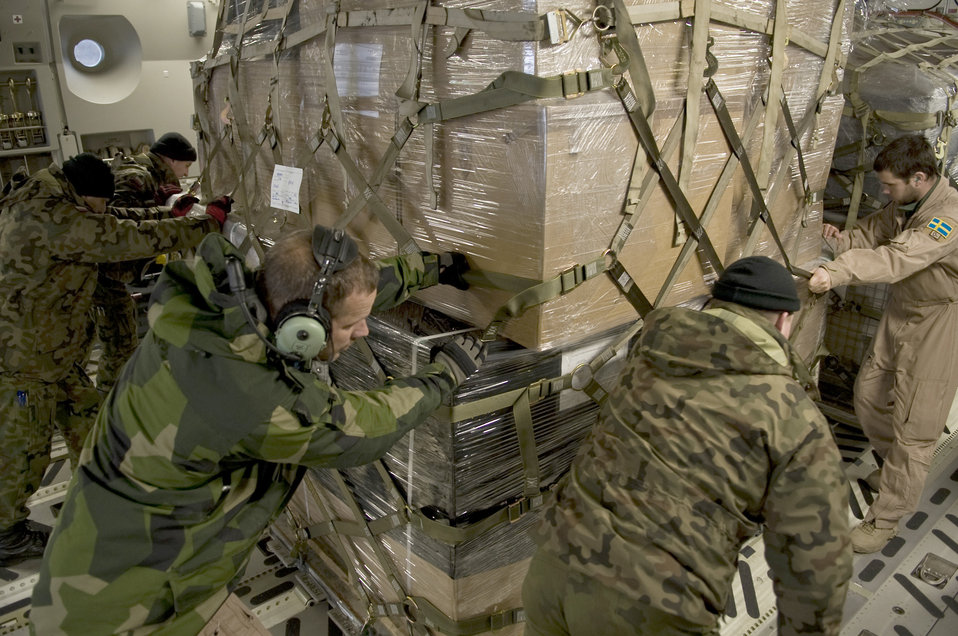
Three-day mission

Crew members from the Heavy Airlift Squadron at Papa, Hungary, and Polish soldiers load pallets on a C-17 Globemaster III Dec. 8, 2010, at Bagram, Afghanistan. The three-day mission will span about 7,000 miles covering the countries of Hungary, Poland, Afghanistan and Lithuania with more than 75,000 tons of cargo.